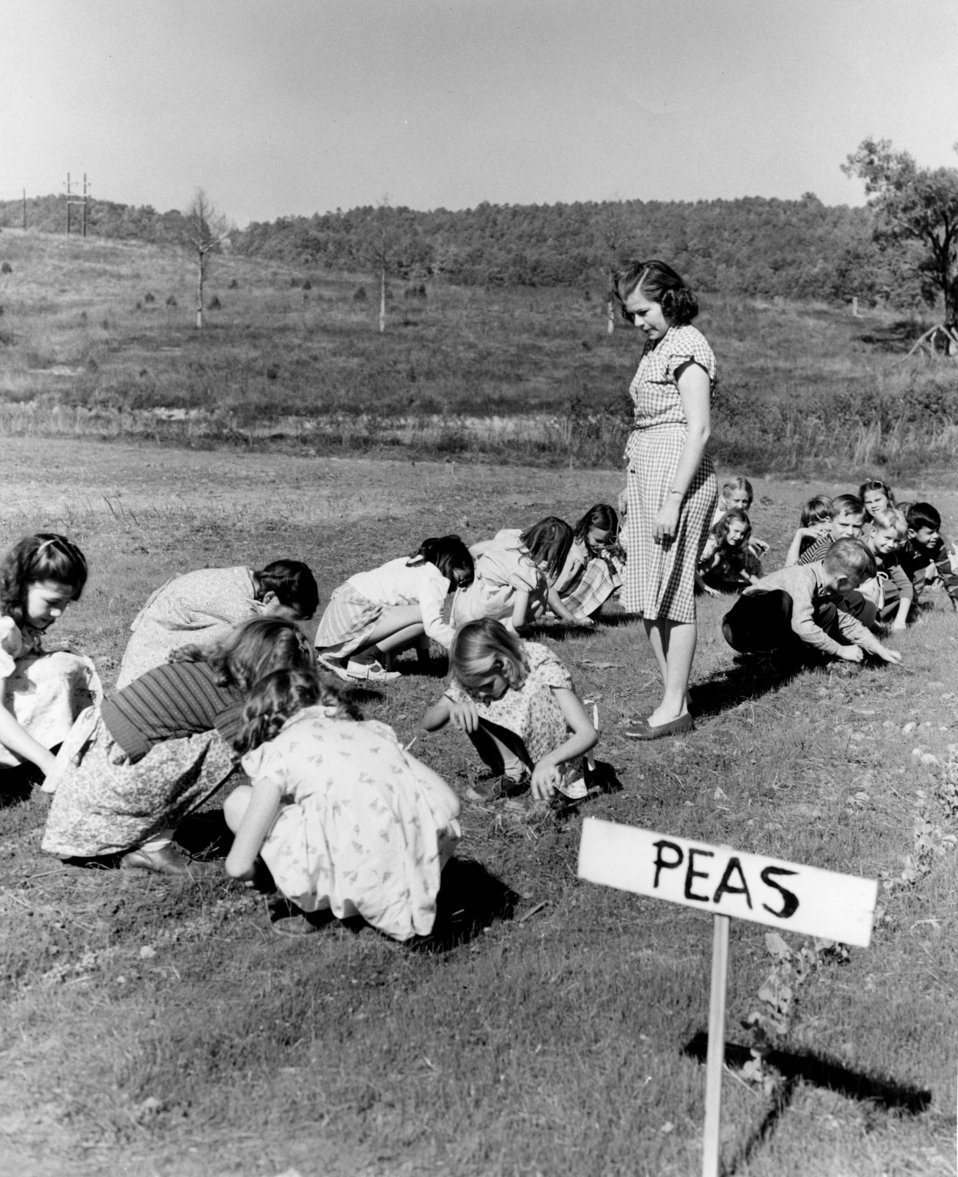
Gamble Valley School Garden Oak Ridge 1947

3833a DOE photo Ed Westcott 10-20-1947 Oak Ridge Tennessee